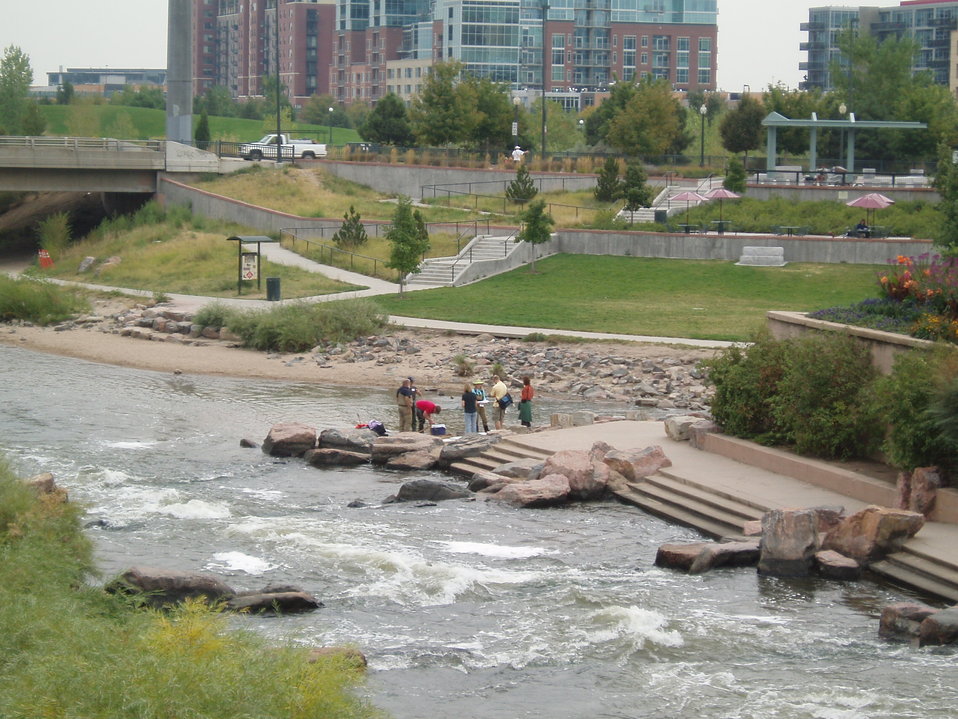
World Water Monitoring Day

Volunteers from the United States Environmental Protection Agency geared up in their official water sampling gear to show students how they do their jobs.

To find out more about water sampling and monitoring visit: www.epa.gov/region8/water/monitoring/